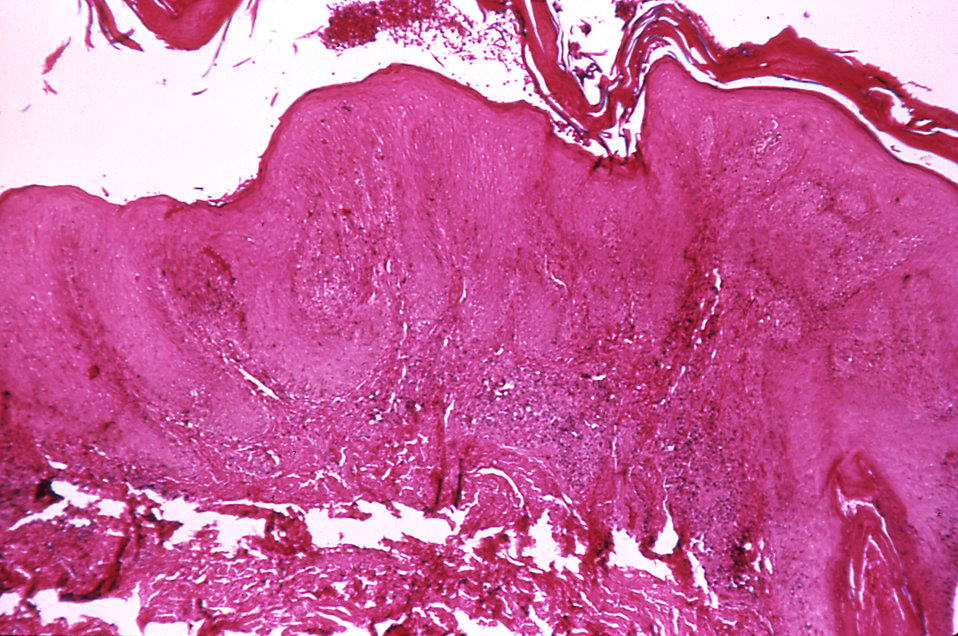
This pinta lesion, stained using the H&E technique, is caused by the bacterium Treponema carateum; magnification 100X.